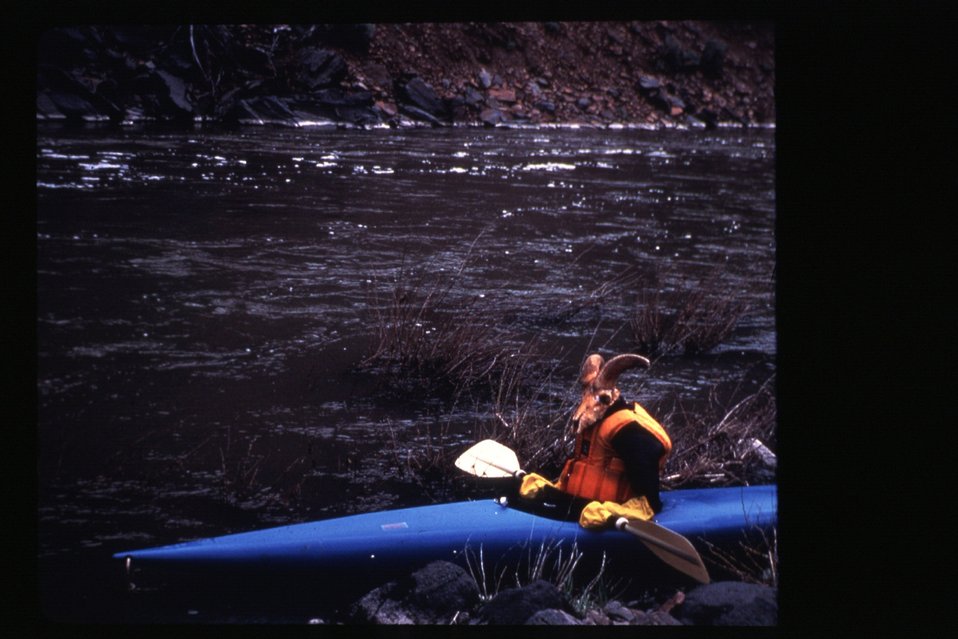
Kayakers on Bruneau River Owyhee Field Office LSRD Lower Snake River District